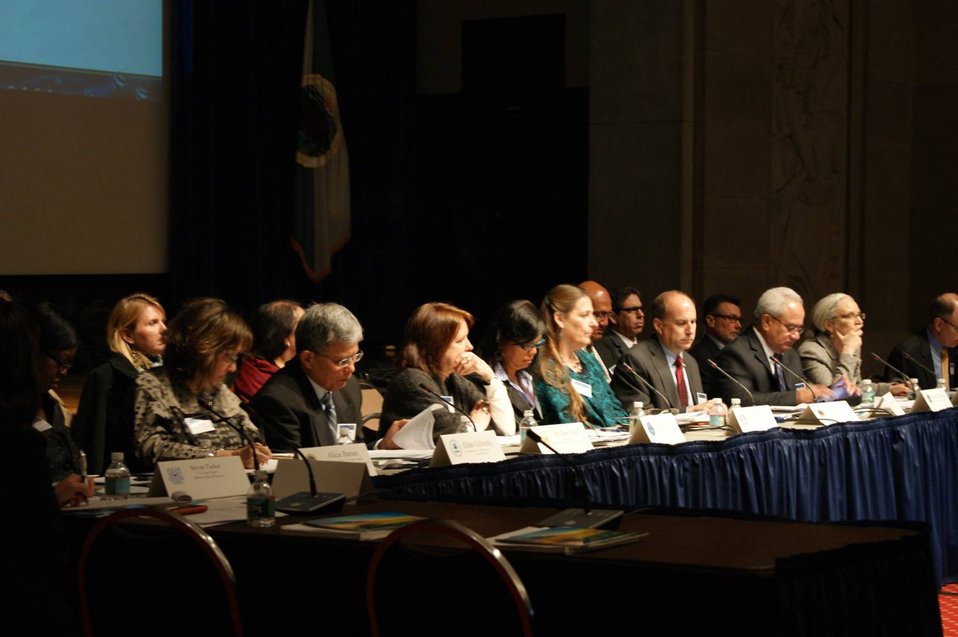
Coral Reef Task Force - Winter Meeting 2012